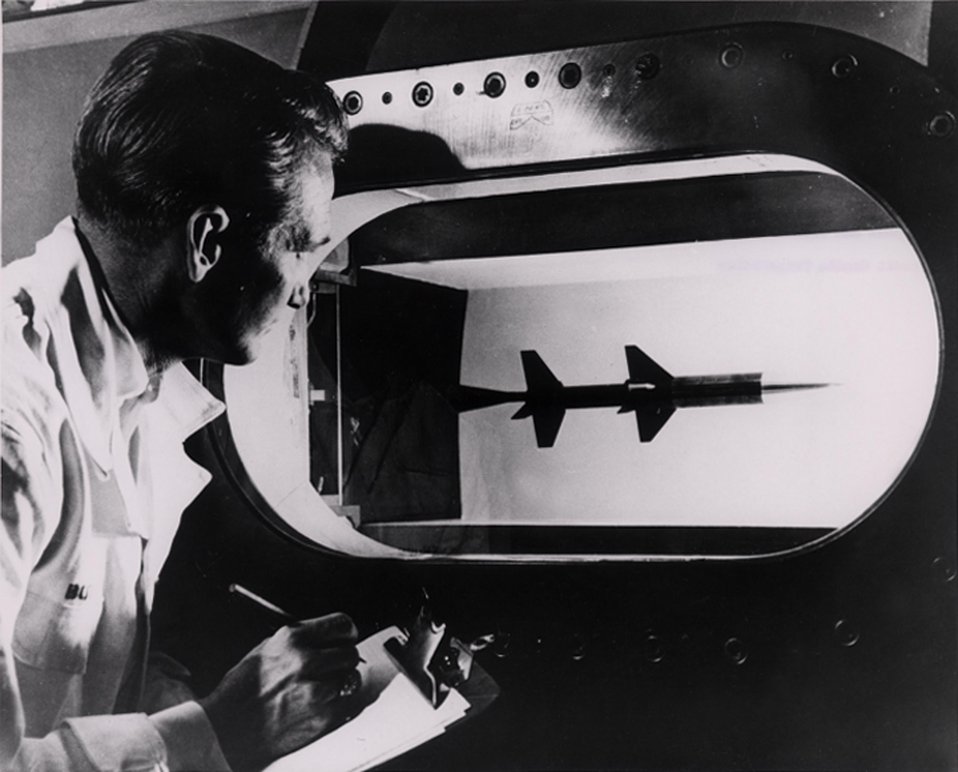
Transonic wind tunnel to test scale models of weapons and research rocket vehicles.